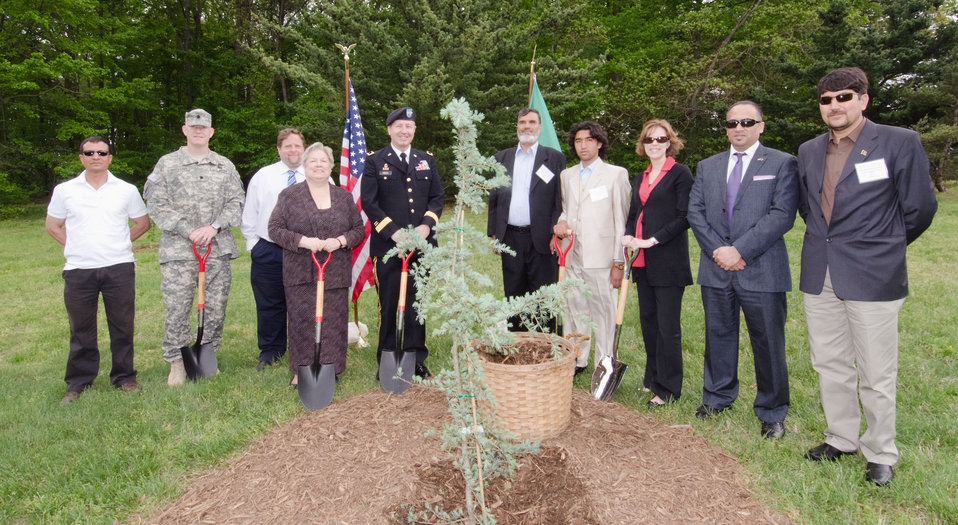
The Arbor Day tree planting of a Cedrus deodara ('Karl Fuchs') at the U.S. National Arboretum, was attended by (l-r) Interpreter and Cultural Advisor Mohammad Saber Rahimi, Director of Agribusiness Development Team (ADT) Program, National Guard Bureau Lt. Col. Howard Schauer, National Arboretum Gardens Unit Leader Scott Akers, Director of U.S. National Arboretum Dr. Colien Hefferan, Special Assistant to the Director, Army National Guard Major General Darren Owens, Ghazni Directorate of Agricultural Irrigation and Livestock Sultan Hossain, Ghazni University Senior Agricultural Student Abdul Fatah, Agriculture Deputy Under Secretary of Farm and Foreign Agricultural Services Darci Vetter; First Secretary for Economic Affairs, Afghan Embassy Qadier Nur, District Governor of Jaghori District Zafar Sharif and others. The tree is originally from Pakta Province and the most important tree in Afghanistan for timber.